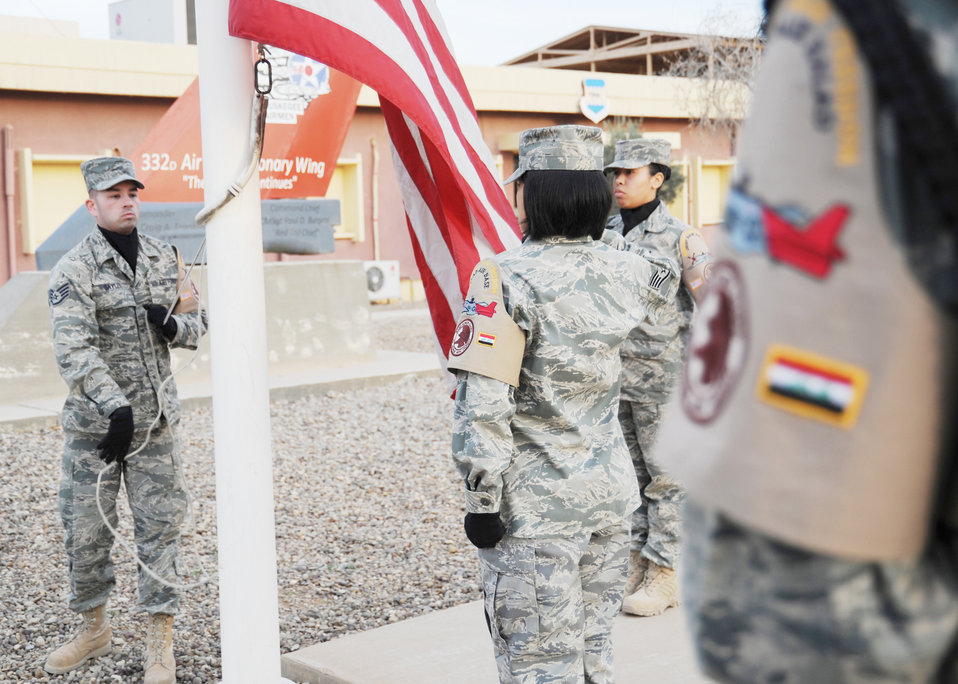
Daily respect

Staff Sgt. Nathan Sayler and Senior Airman Nicole Jenkins of the 332nd Expeditionary Communications Squadron lower the flag as Staff Sgt. Rosa Blackdeer of the 332nd Expeditionary Medical Support Squadron salutes during a retreat ceremony Jan. 2, 2010, at Joint Base Balad, Iraq. Taps is played during retreat here in honor of the fallen.